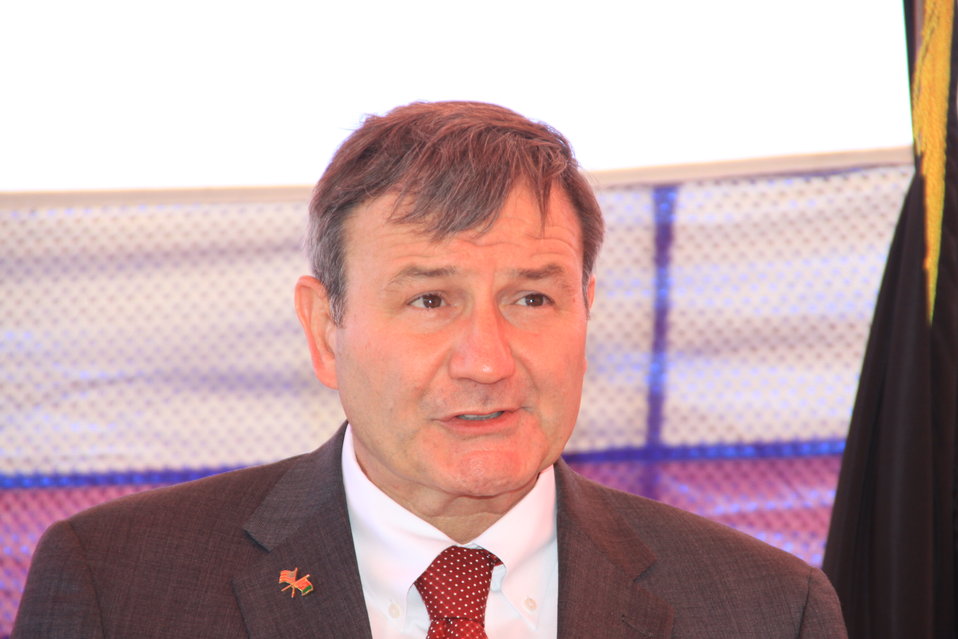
AVIPA Plus Wheat Seed Distribution 101005

US Ambassador Karl Eikenberry and USAID Acting Mission Director Kevin Brownawell joined the Minister of Agriculture, Irrigation and Livestock, H.E. Minister Mohammed Rahimi in signing a Memorandum of Understanding and distributing vouchers to area farmers for wheat and fertilizer.

US Ambassador Karl Eikenberry and USAID Acting Mission Director Kevin Brownawell joined the Minister of Agriculture, Irrigation and Livestock, H.E. Minister Mohammed Rahimi in signing a Memorandum of Understanding and distributing vouchers to area farmers for wheat and fertilizer.